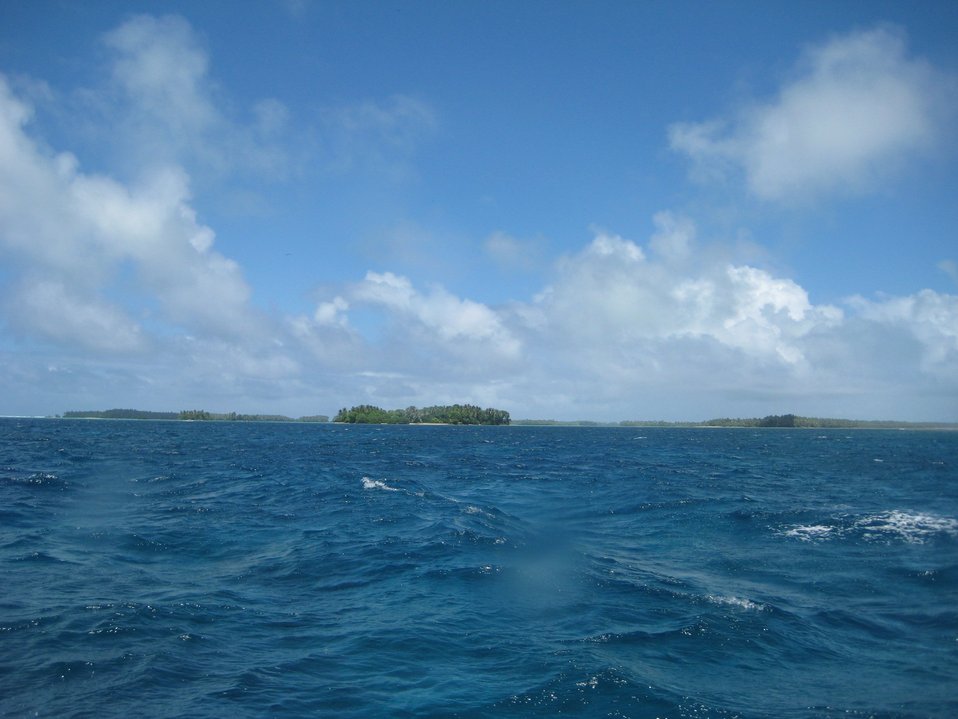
Palmyra Island seen looking astern from the NOAA Ship Hi'ialakai as it proceeds to its next project area.